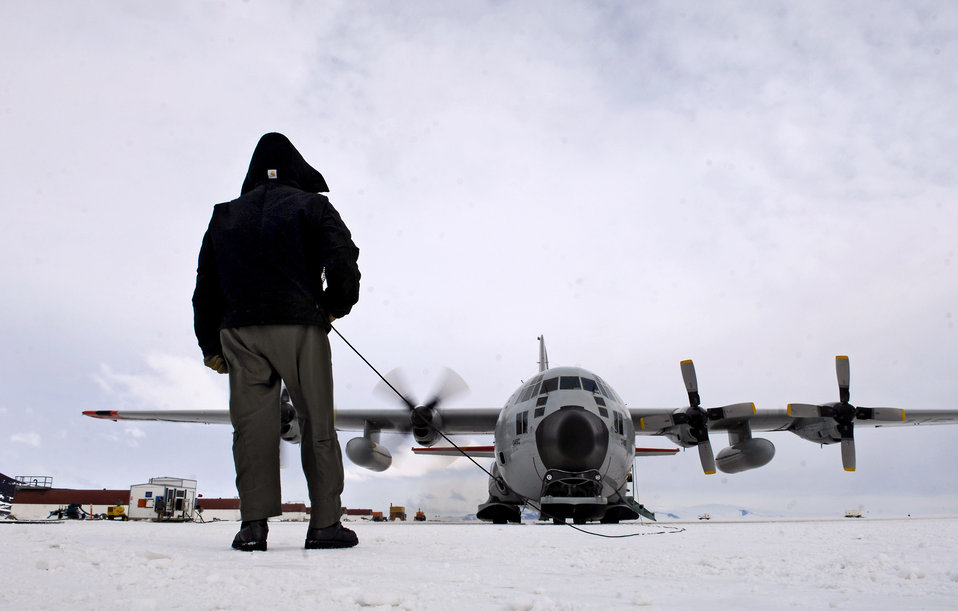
Ice, ice baby!

Chief Master Sgt. Bill Nolin conducts pre-flight checks on an LC-130 Hercules Nov. 26 at the annual sea ice runway near McMurdo Station, Antarctica, during Operation Deep Freeze. Ski-equipped LC-130s, crews and support personnel from the New York Air National Guard's 109th Airlift Wing are supporting the 13th Air Force-led Joint Task Force Support Forces Antarctica, Operation Deep Freeze. Operation Deep Freeze is a unique joint and total force mission that has supported the National Science Foundation and U.S. Antarctic Program that began in 1955.